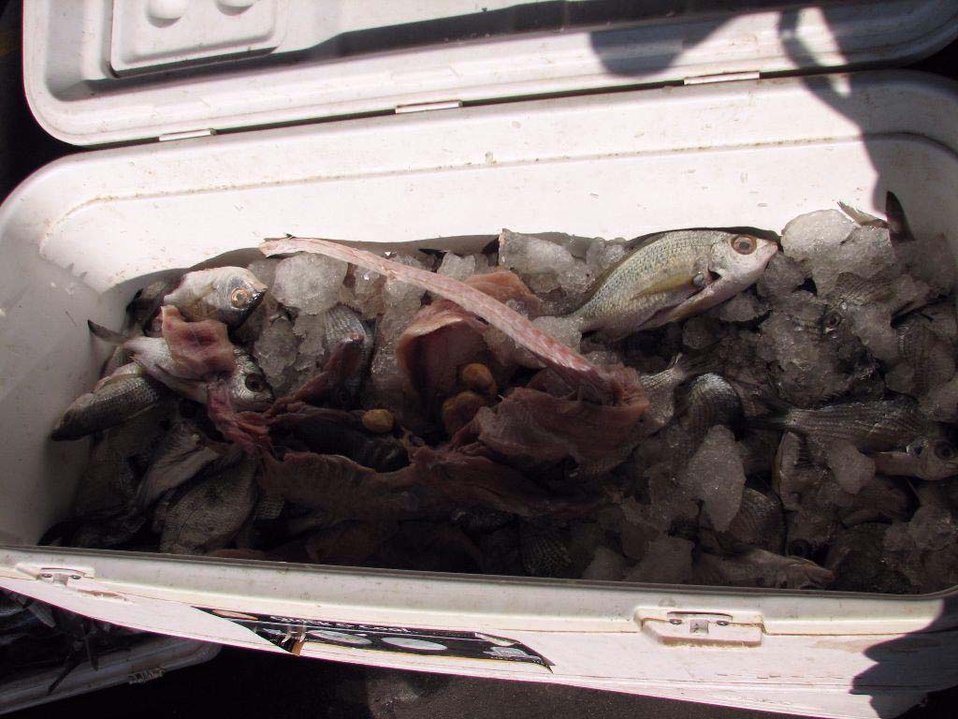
Iguana Meat 2

U.S. Customs and Border Protection officials seized this iguana meat on June 7, 2011, when Elidoro Soria Fonseca tried to smuggle it into the U.S. at the Otay Mesa Port of Entry. He had 159 pounds of the meat in his vehicle.